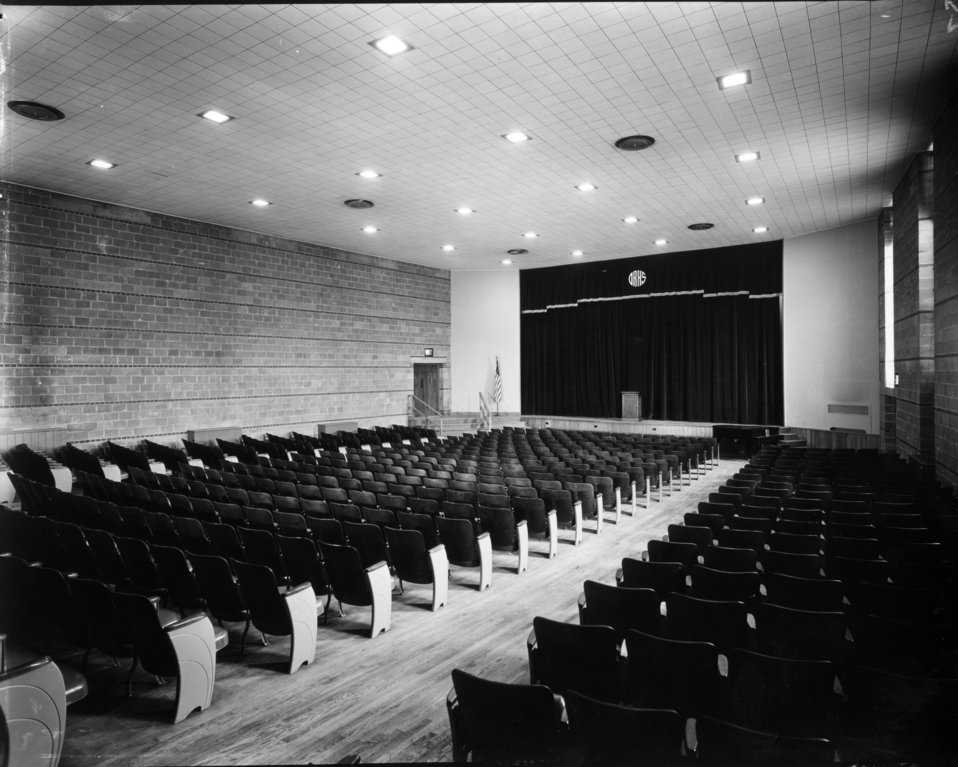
Schools at Oak Ridge